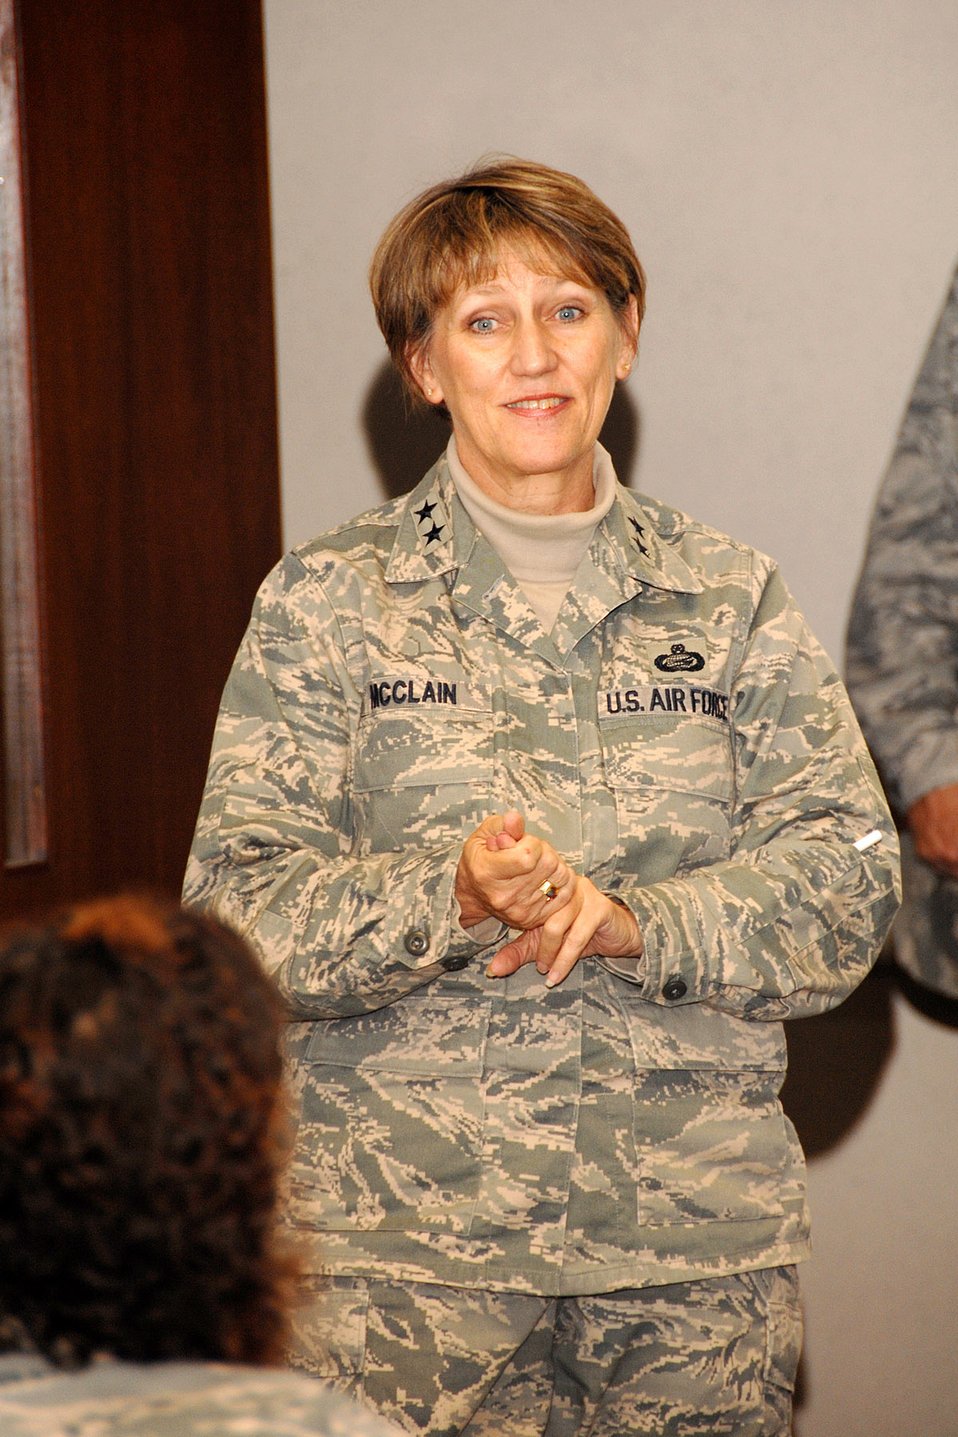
Spread the Word team visit

Maj. Gen. K.C. McClain, commander of the Air Force Personnel Center at Randolph Air Force Base, Texas, discusses consolidation of personnel functions with military personnel and civilians Nov. 13 during a visit to Wright-Patterson Air Force Base, Ohio. It was part of a three-day stop by AFPC's